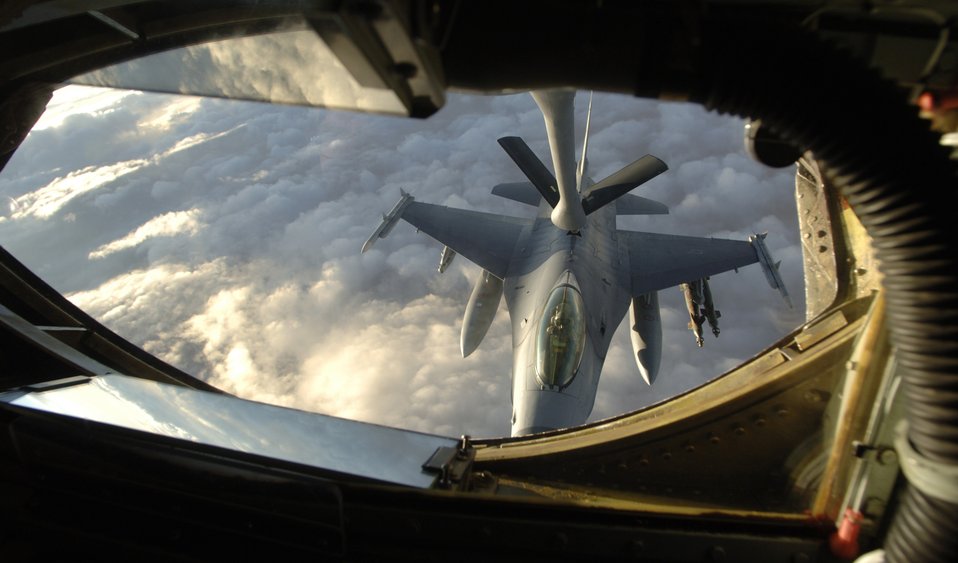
Close air support

A KC-135 Stratotanker connects with an F-16 Fighting Falcon over Iraq Oct 23 to offload more than 20,000 lbs of fuel. The F-16 then will resume its close-air-support mission.